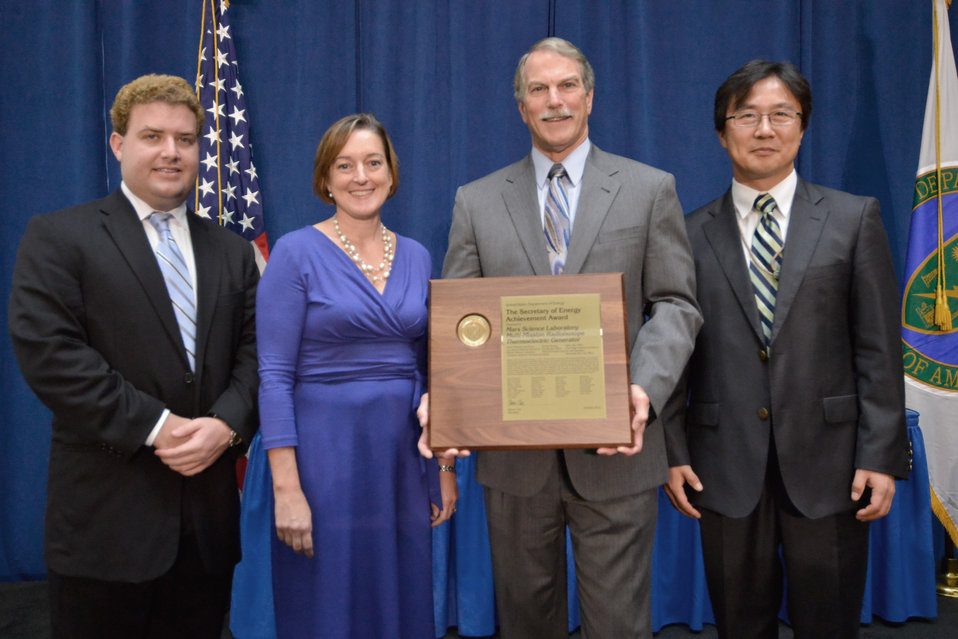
Members of the Mars Science Laboratory Multi-Mission Radioisotope Thermoelectric Generator Team.